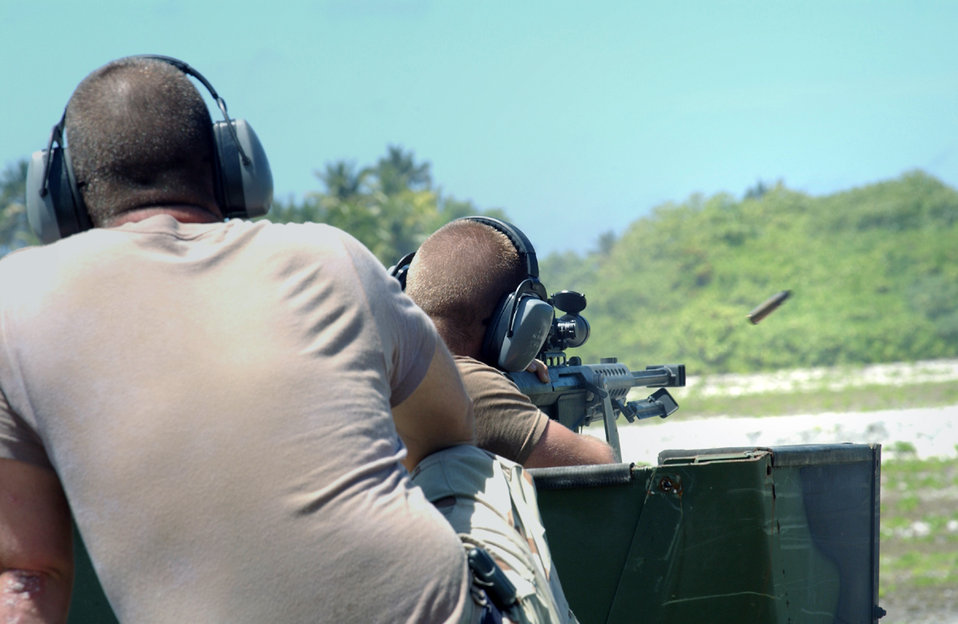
Making every second count

OPERATION ENDURING FREEDOM -- Senior Airman Phillip Dyer fires a .50-caliber rifle while Tech. Sgt David Ashcraft spots him during live-fire training at a forward-deployed location. The explosive ordnance disposal technicians use the rifle to disrupt or destroy unexploded ordnance from a safe distance. Because of the high caliber of the weapon, it must be mounted or set on its bipods. The Airmen are assigned to the 40th Expeditionary Civil Engineer Flight and are deployed from Nellis Air Force Base, Nev.